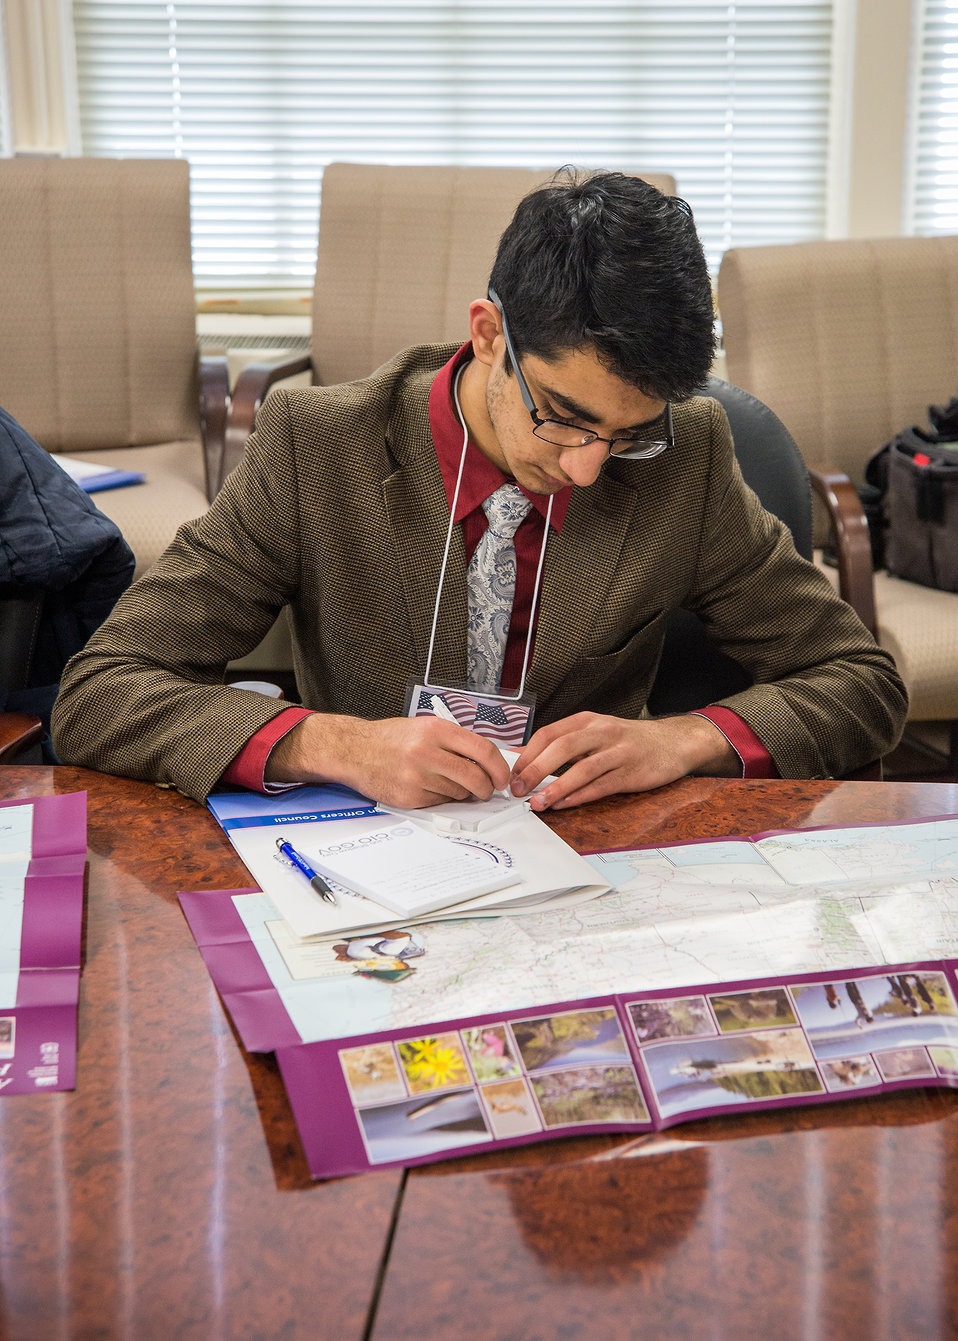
Salman Guliwala, a student from Thomas Jefferson High School of Science and Technology in Alexandria, VA. takes notes during the U.S. Department of Agriculture (USDA), Office of the Chief Information Officer (OCIO) IT Job Shadow Day, Tuesday, Mar. 25, 2014. The OCIO IT Job Shadow Day hosts students from local high schools in the Washington, D.C. area annually with IT professionals and agricultural specialists from a variety of mission areas at USDA.